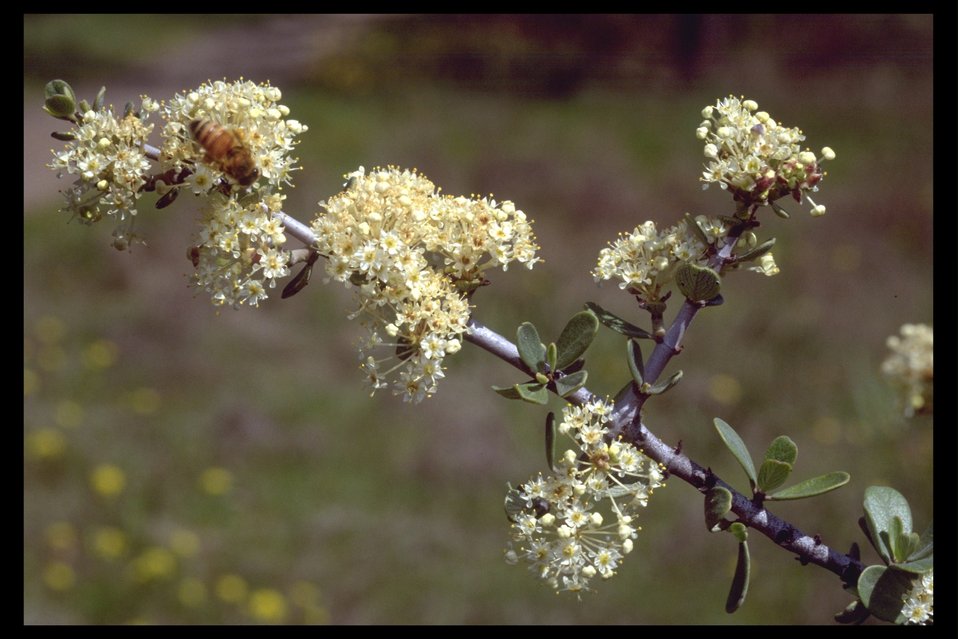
Wedgeleaf Ceanothus, also called the Buckbrush, (Ceanothus cuneatus) found at Upper Table Rock.